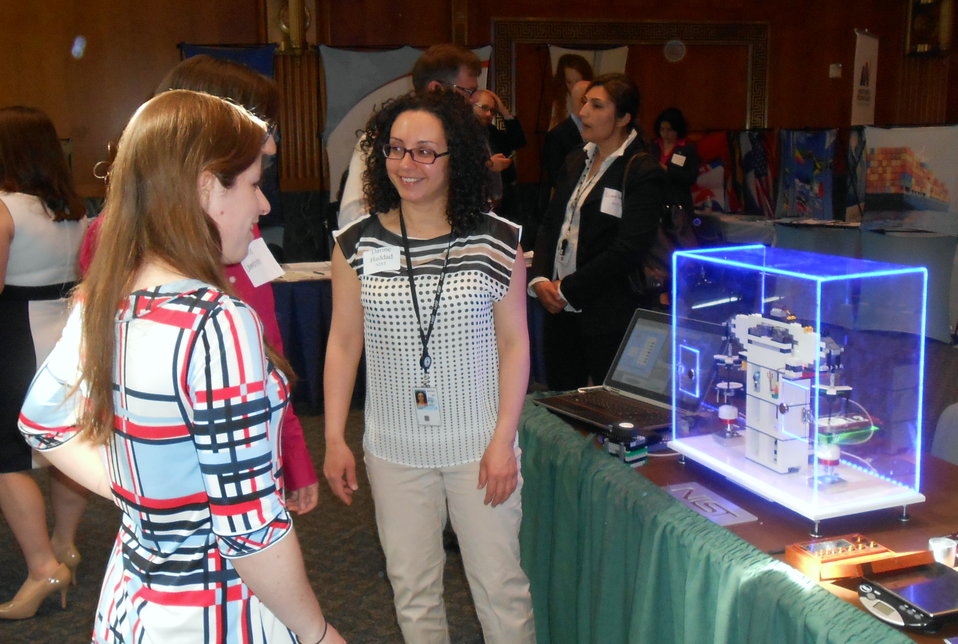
NIST physicist Dr. Darine Haddad (center) describes a Lego model watt balance and NIST’s research in redefining the kilogram to congressional staffers as part of the Department of Commerce Day on the Hill event in the Dirksen Senate Office Building.